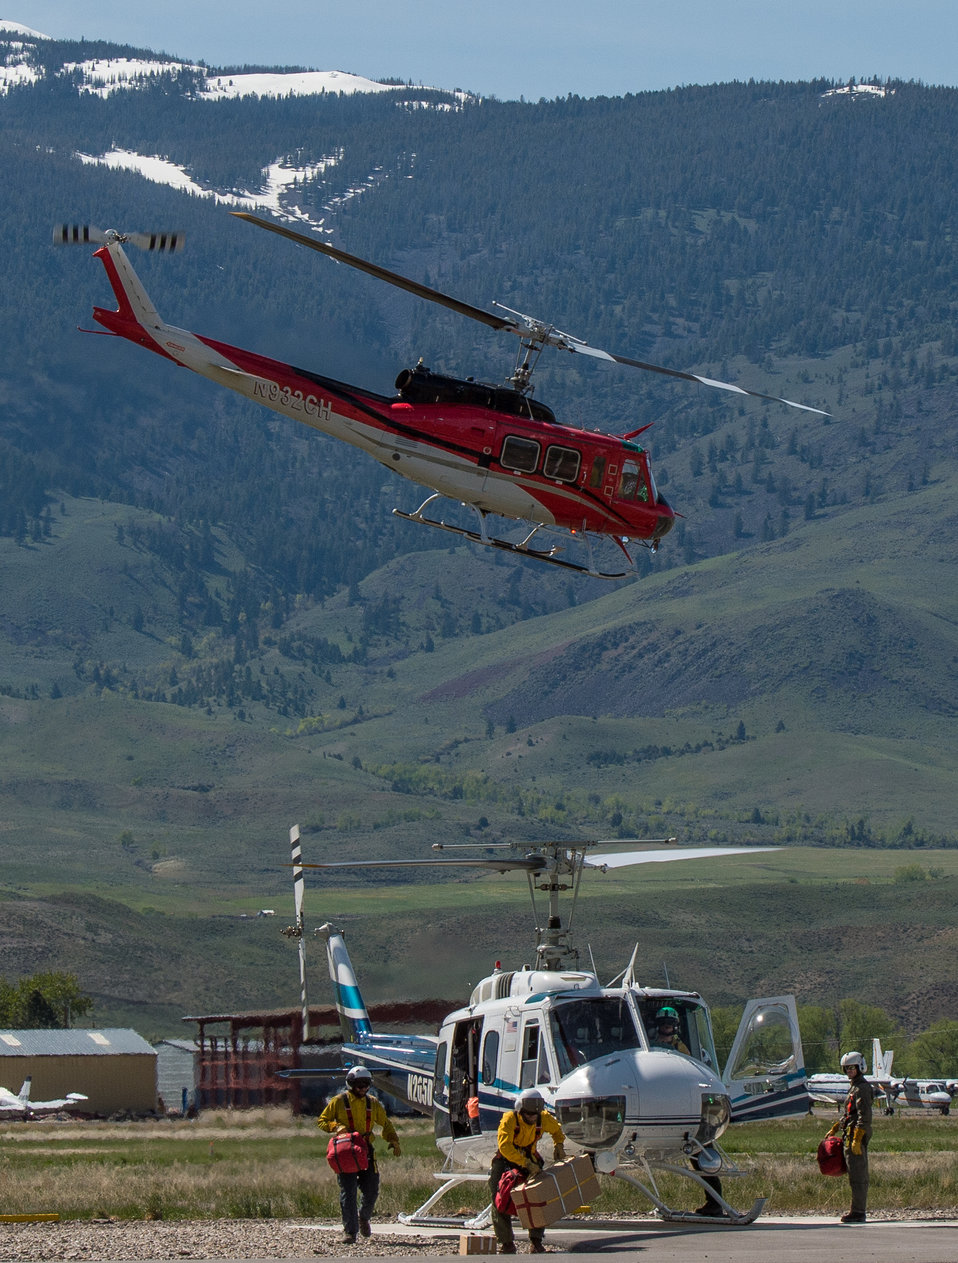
Heligroup Fire's Bell 205A-1 (red and white) takes off with four veteran wildland firefighter rappellers and a spotter/evaluator, while on the ground Idaho Helicopters' Assistant Chief Pilot JT Theis keeps the engine running, as a new crew and cargo bundle are brought onboard the (blue and white) Bell 205A-1 helicopter at the U.S. Department of Agriculture (USDA), U.S. Forest Service (USFS) National Helicopter Rappel Program’s Rappel Academy at Salmon Air Base in Salmon, ID on Wednesday, May 14, 2014. From May 12, 2014, 72 veteran rappellers from all over the nation, 30 support staff, and three helicopters with flight crews attend the training at Salmon Air Base. Participants will rappel into the Perreau Creek area. The annual training is delivered in accordance with the National Rappel Operations Guide; strengthen leadership, teamwork, and communications within the rappel community, and produces quality aerial delivered firefighters for use in fire and aviation operations. The USDA Forest Service National Helicopter Rappel Program’s primary mission is initial attack. Rappel crews may be utilized for large fire support, all hazard incident operations, and resource management objectives.